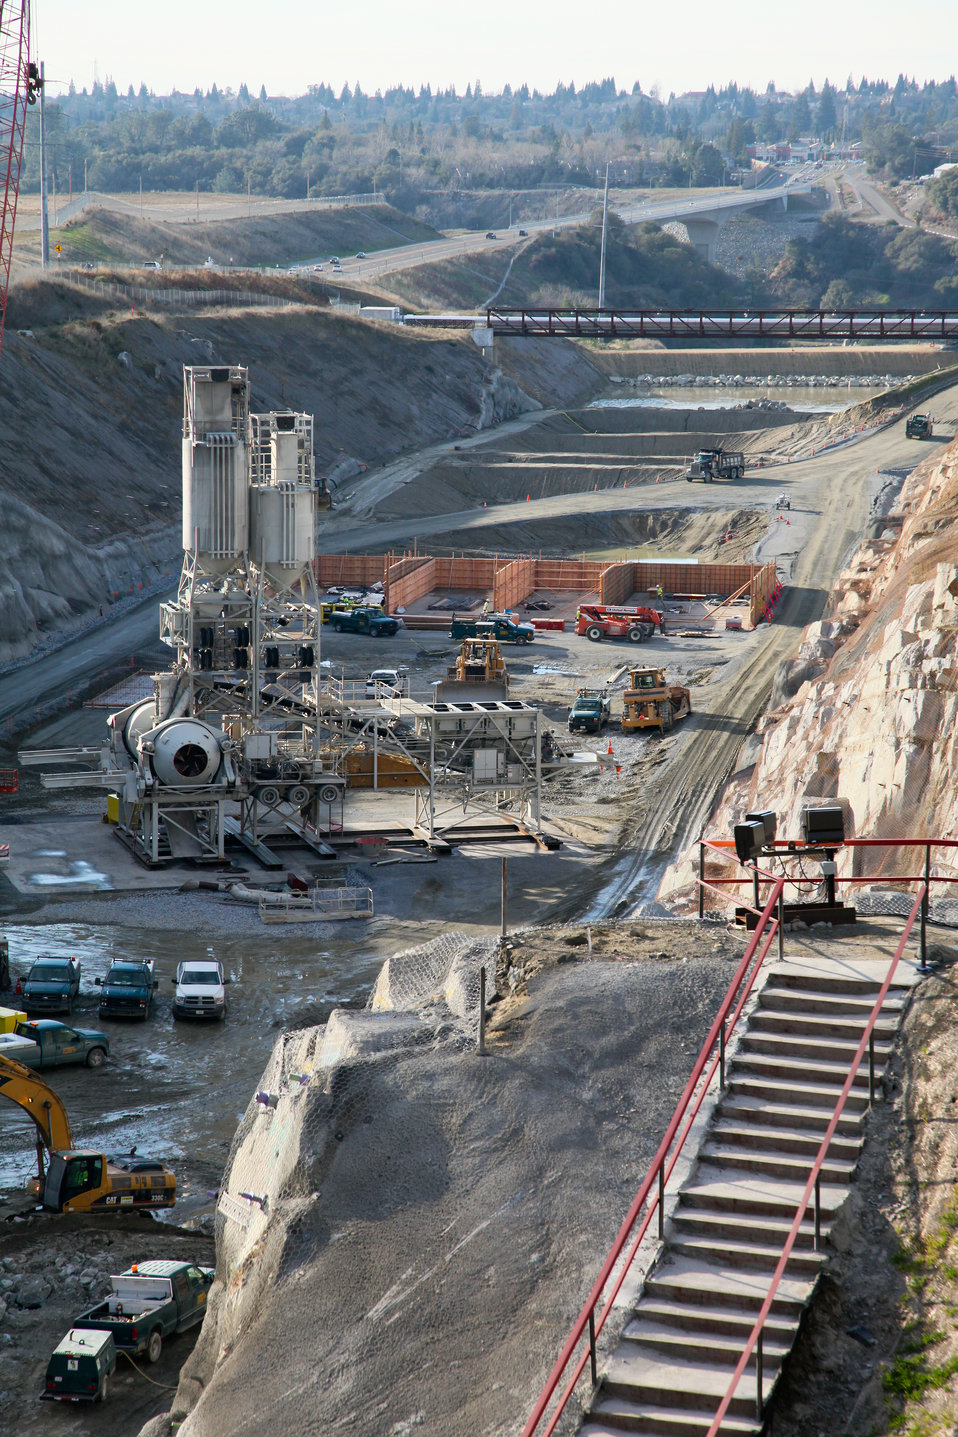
Concrete mixing equipment moves into the Folsom Dam auxiliary spillway

Workers complete the first stage of installing concrete mixing equipment for the new Folsom Dam auxiliary spillway in Folsom, Calif., Jan. 25, 2012. Paving is scheduled to begin in May, said U.S. Army Corps of Engineers Sacramento District project engineer Larry Smith. The spillway will allow Folsom Dam to release water sooner and more safely. The project is part of the Folsom Dam Joint Federal Project, a joint effort of the U.S. Army Corps of Engineers Sacramento District, the U.S. Bureau of Reclamation, the Central Valley Flood Protection Board and the Sacramento Area Flood Control Agency to improve the safety of the dam and reduce flood risk for the greater Sacramento area.